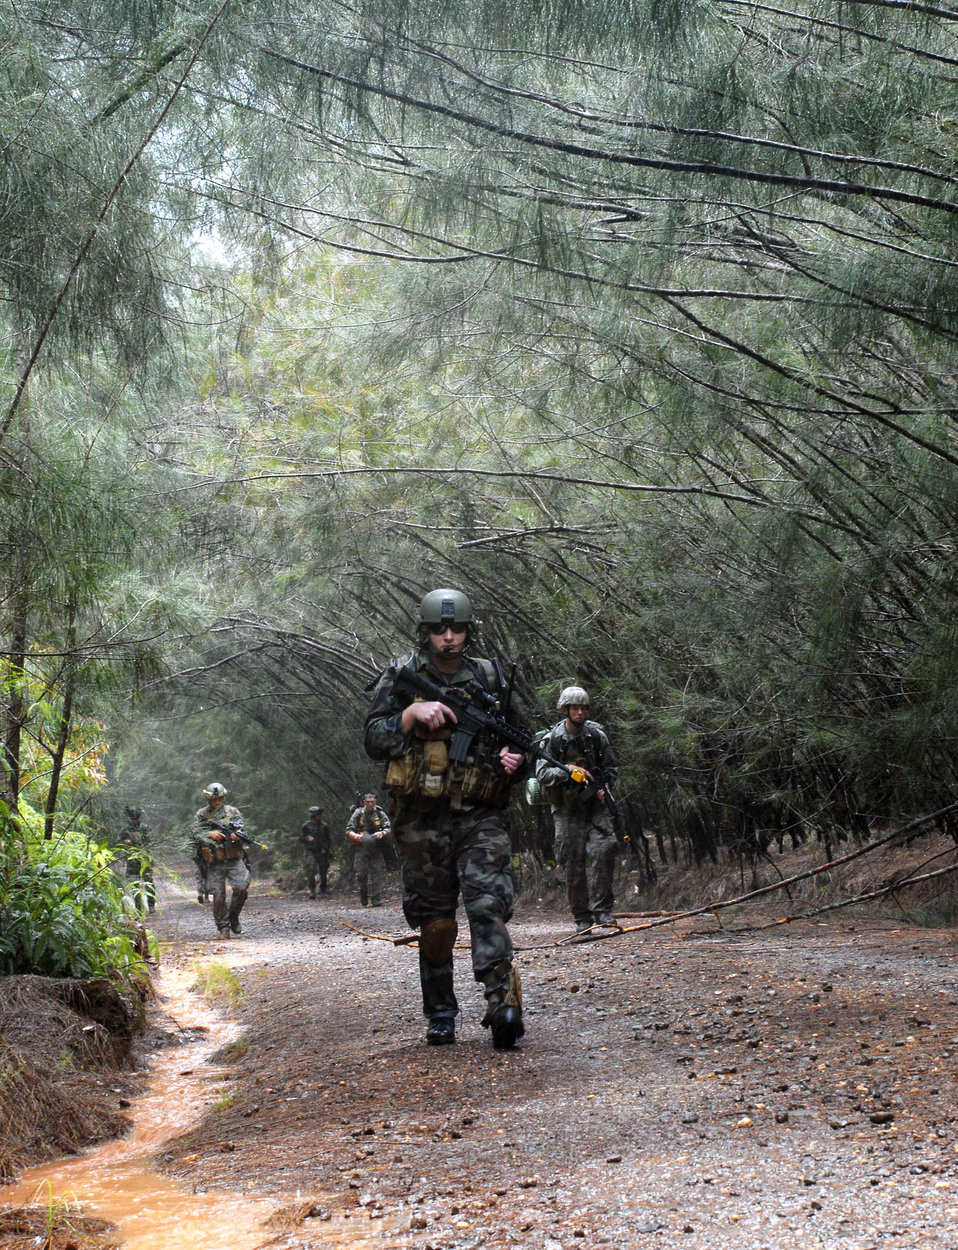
Airmen train with Army to become JTACs

Tactical air control party Airmen hike at Wheeler Army Airfield's East Range near Hickam Air Force Base, Hawaii, June 23-26 to sharpen proficiencies necessary for upgrade training. When deployed, these young men who volunteered for the TACP career field are responsible for calling in close-air support and providing clearance for air assaults to ensure the right targets are reached. Stationed with Army combat units on the ground, they must be also prepared to administer first aid and survive in a hostile environment.